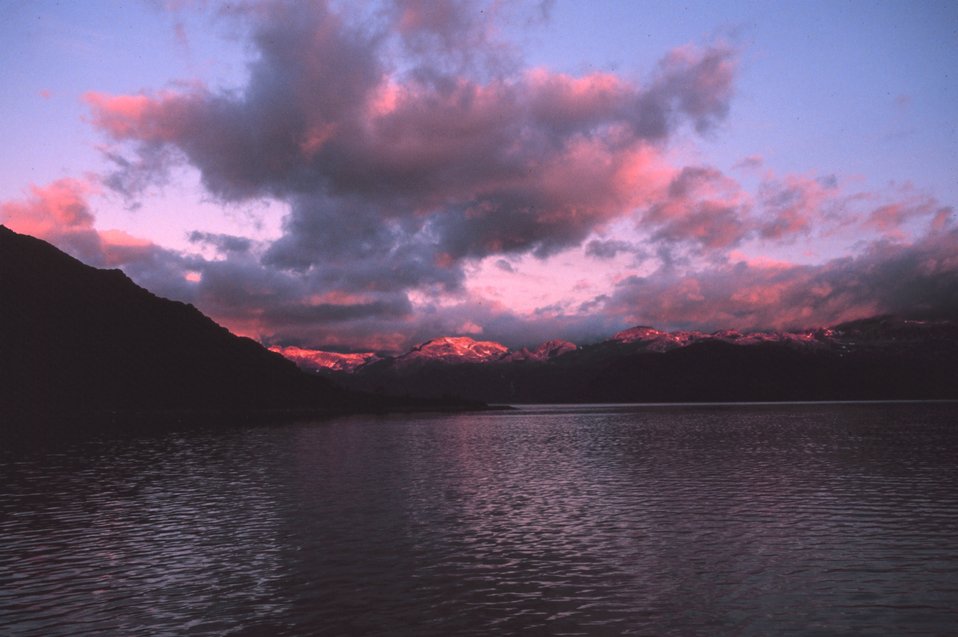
Sunrise on the way to Ketchikan